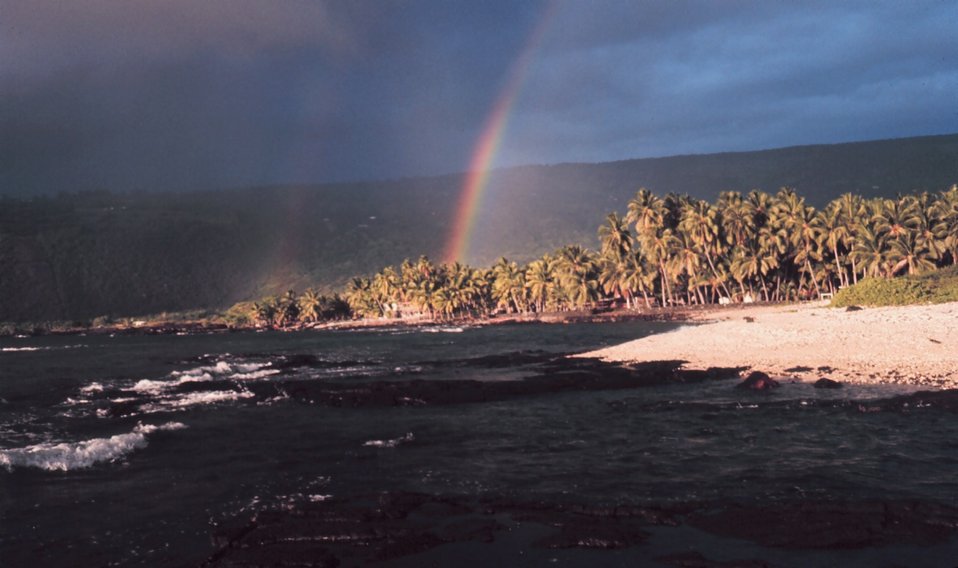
A double rainbow over palm trees on the coast